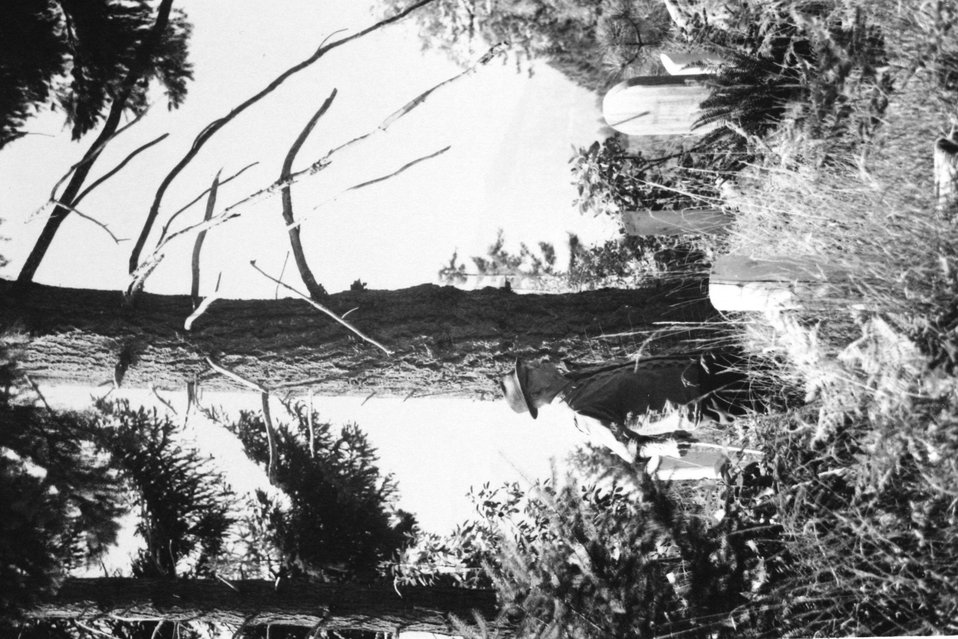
Ivin Billings at his grandfather's grave at Big Meadow.